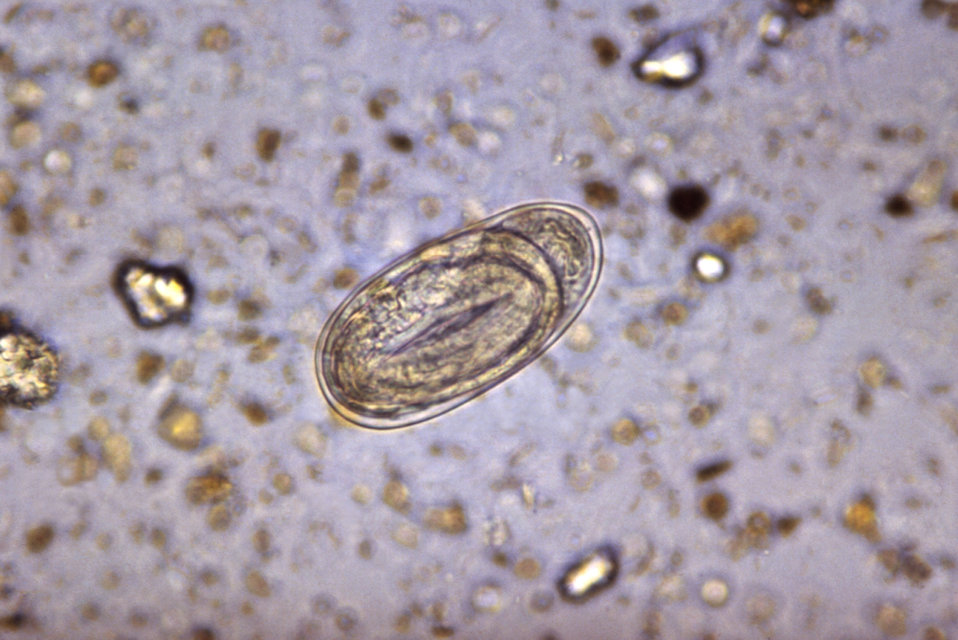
This embryonated egg is indistinguishable between the Ancylostoma duodenale or Necator americanus hookworm.